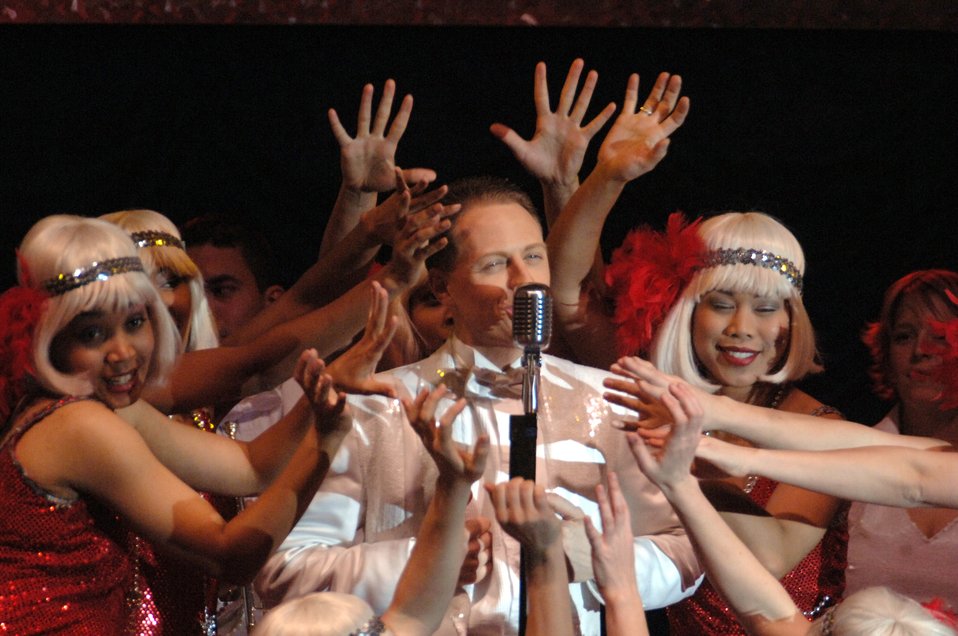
Tops in Blue

YOKOTA AIR BASE, Japan (AFPN) -- Tops in Blue's Capt. William Middleswart sings for several hundred people during a concert here. The group -- called the Air Force's